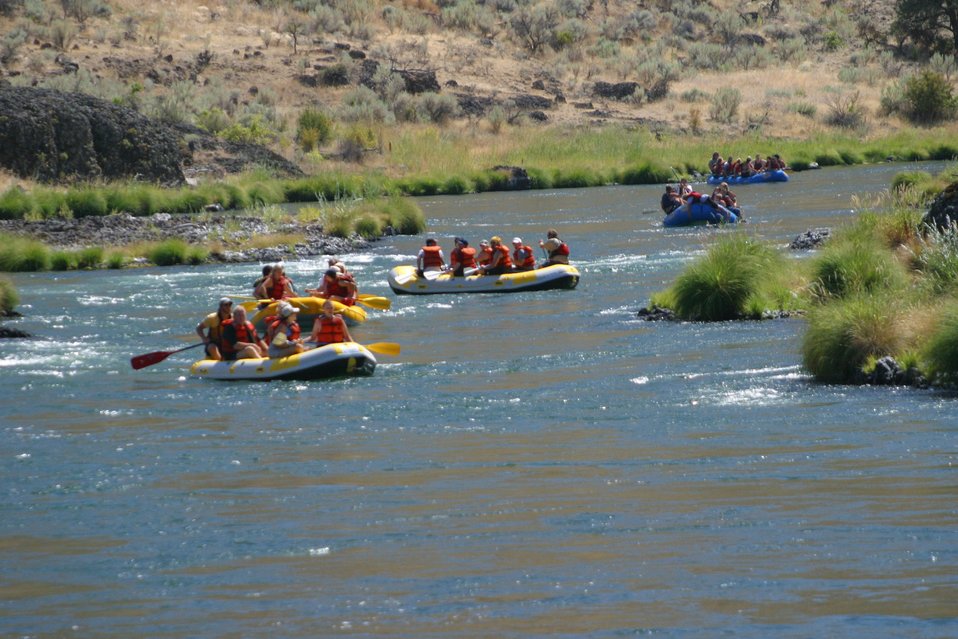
Looking up stream from the Sandy Beach take out.